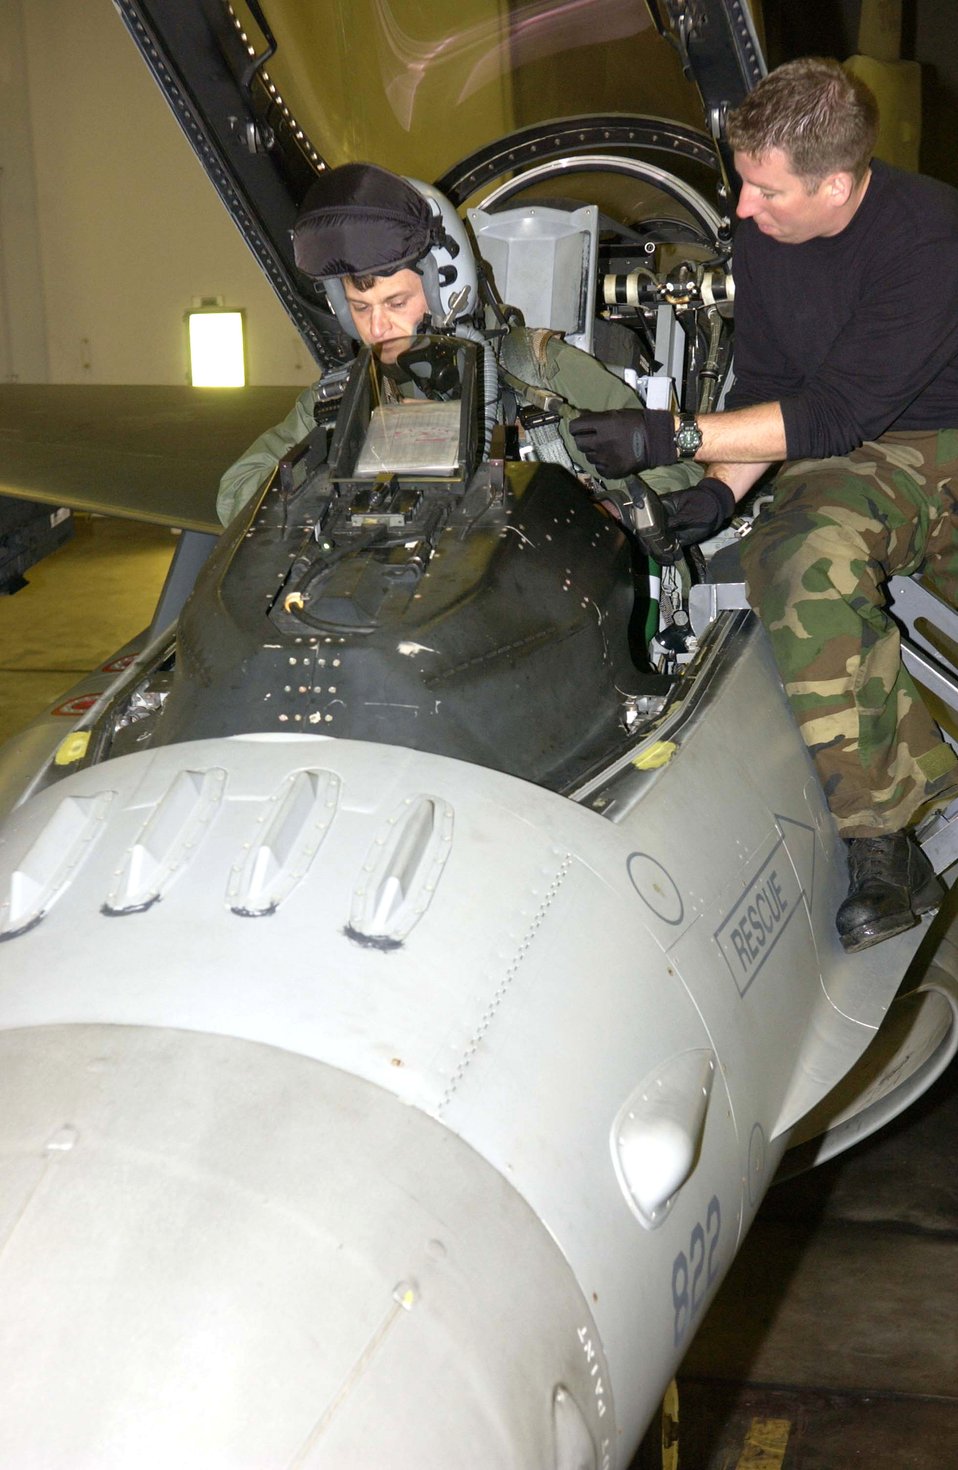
Misawa Airmen build winning deployment team

Lt. Col. Andrew Dembosky climbs into his F-16 Fighting Falcon as Crew Chief Staff Sgt. Robert Parsons helps with the preflight preparations Nov. 14 at Misawa Air Base, Japan. Colonel Dembosky is the 35th Fighter Wing inspector general.